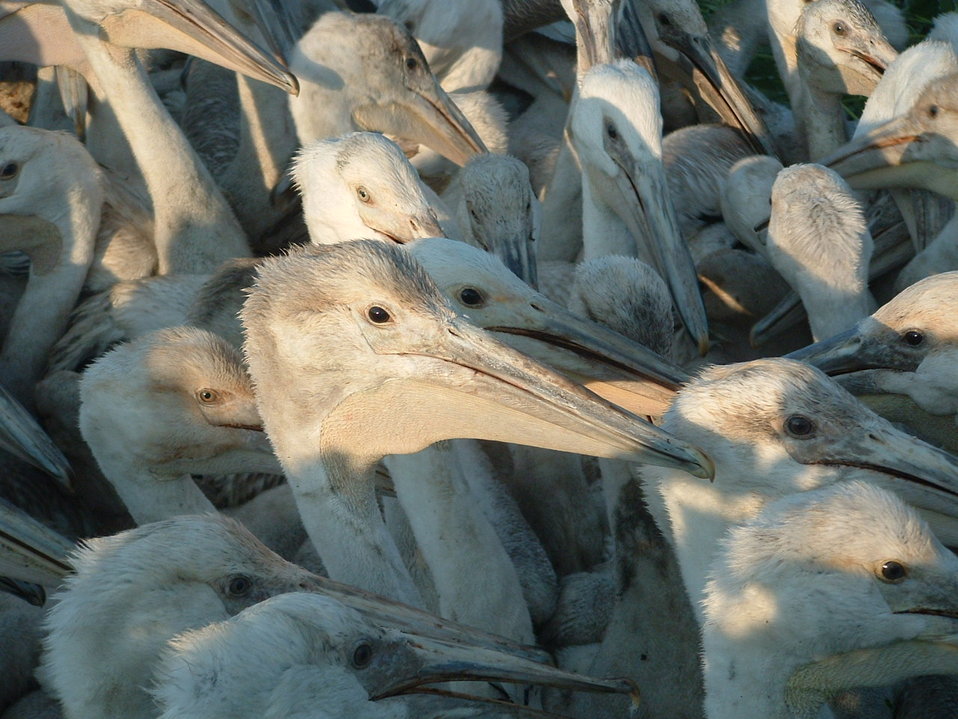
Crowd Sourcing

Immature American white pelicans group together at about 3 weeks old to form pods or creches. It is believed they do this for warmth and protection when adults start spending more time away from the colony for feeding. Breeding colony is located in Day Co. in South Dakota.